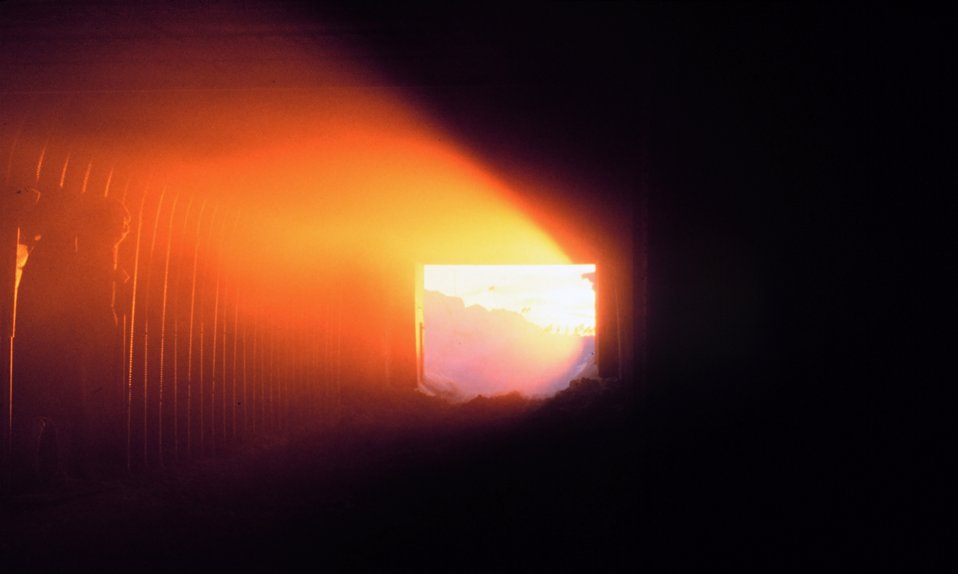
Reminiscent of ancient astronomic observatories, the last rays of the setting sun suffuse the entrance tunnel with a golden glow.